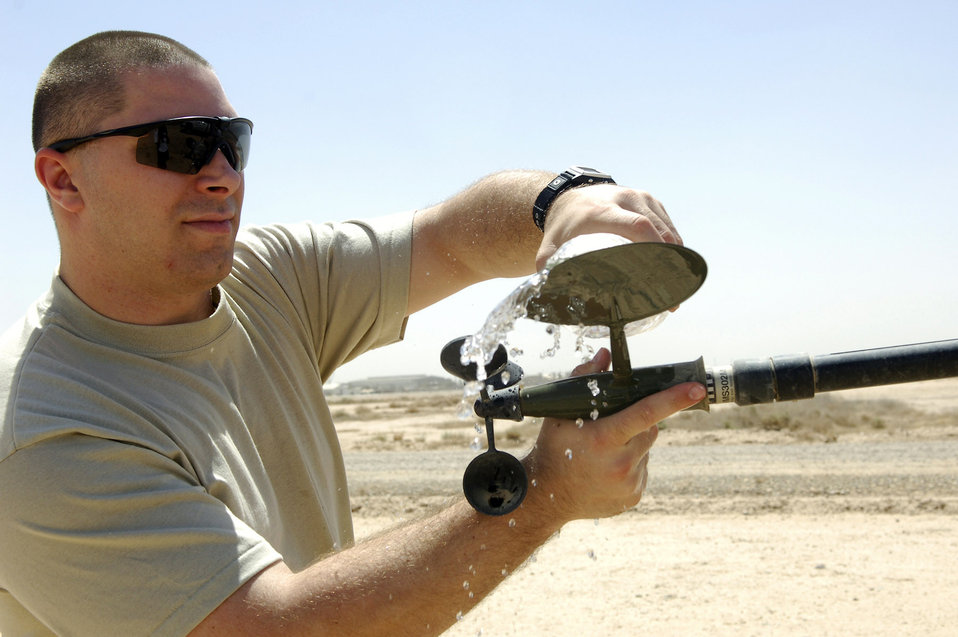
It's a 'shamal world' for combat weather Airmen

Staff Sgt. Richard Skelly cleans components of the tactical weather equipment suite that measure the wind speed and direction June 14 at Joint Base Balad, Iraq. Sergeant Skelly is a 332nd Expeditionary Operations Support Squadron combat weather forecasterdeployed from Andrews Air Force Base, Md.